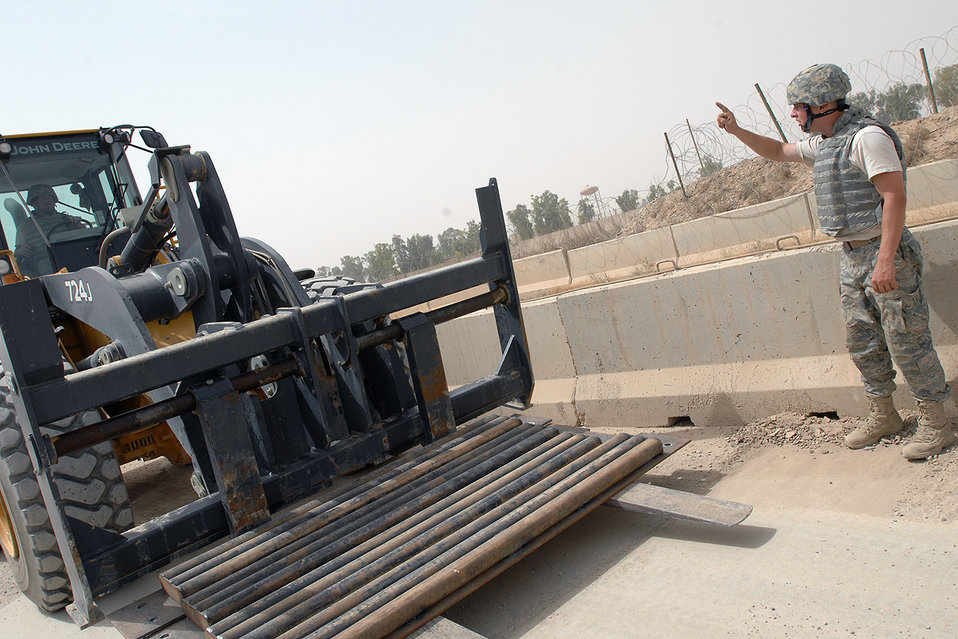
Airmen overcome bumps in road

Staff Sgt. Brent Sisson directs the placement of new speed bumps May 22 at Kirkuk Air Base, Iraq. The speed bumps are meant to not only control speed mitigation but also increase the safety of the security-forces Airmen manning the gates and protect more than 6,000 servicemembers deployed here. Sergeant Sisson is a 506th Expeditionary Civil Engineer Squadron heavy equipment operator. He is a native of Anchorage, Alaska, deployed from Elmendorf Air Force Base, Alaska.